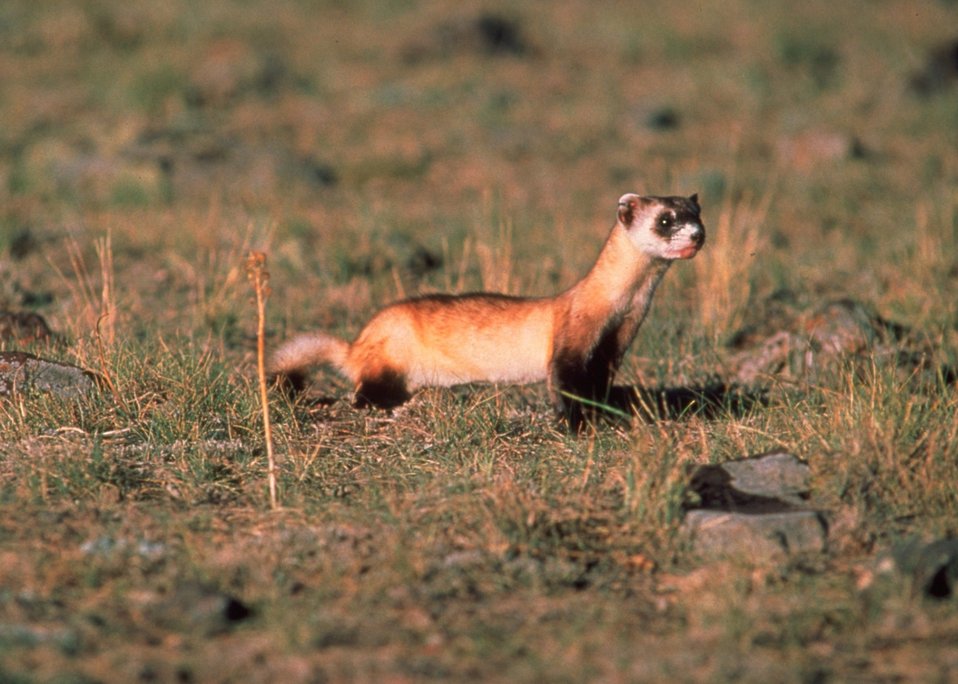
Ferrett found out in the wilderness.